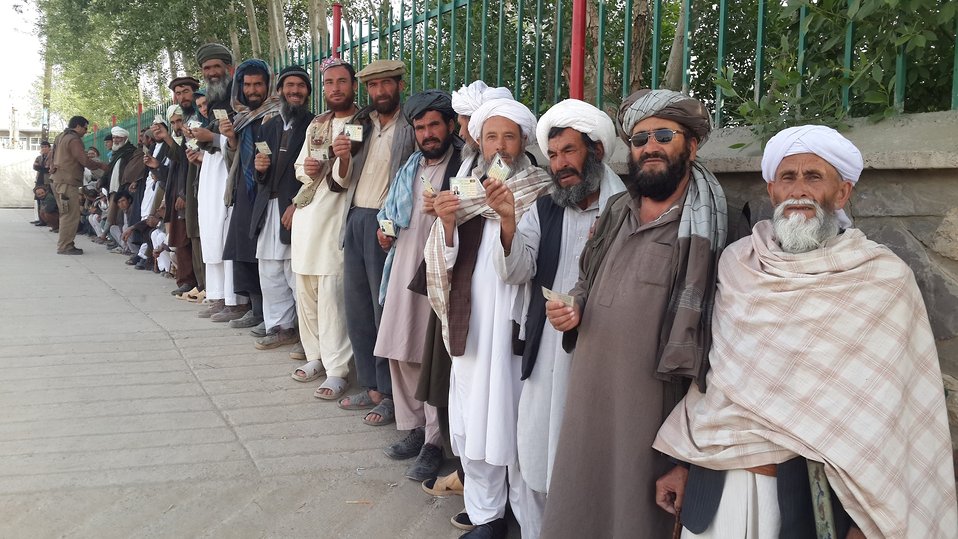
Residents line up in front of a polling center in Ghor province province.